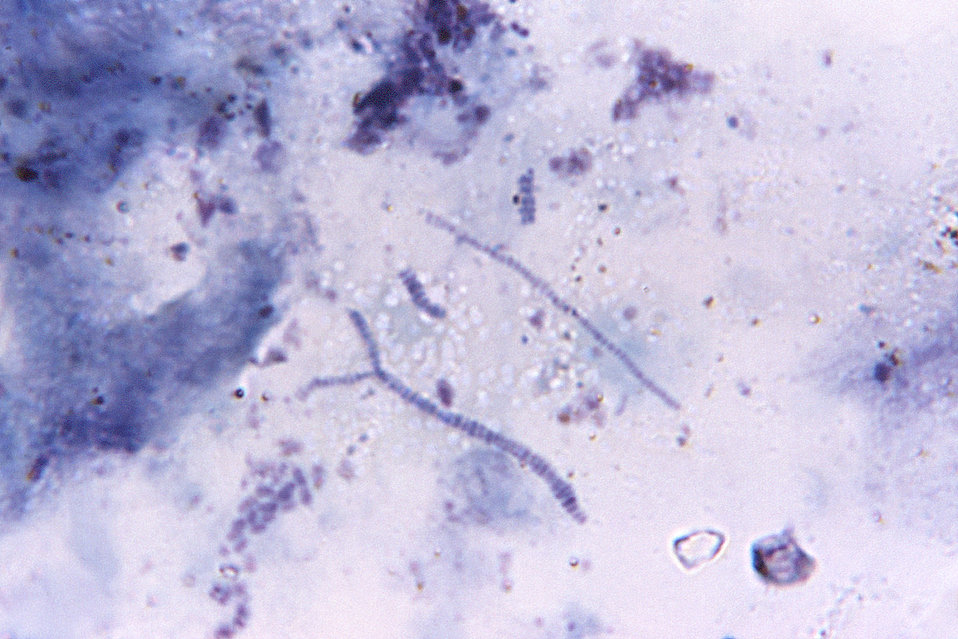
Magnified 375X, this Giemsa-stained photomicrograph revealed some of the ultrastructural morphology displayed by Dermatophilus congolensis bacteria, including branching hyphae, and numbers of zoospores.